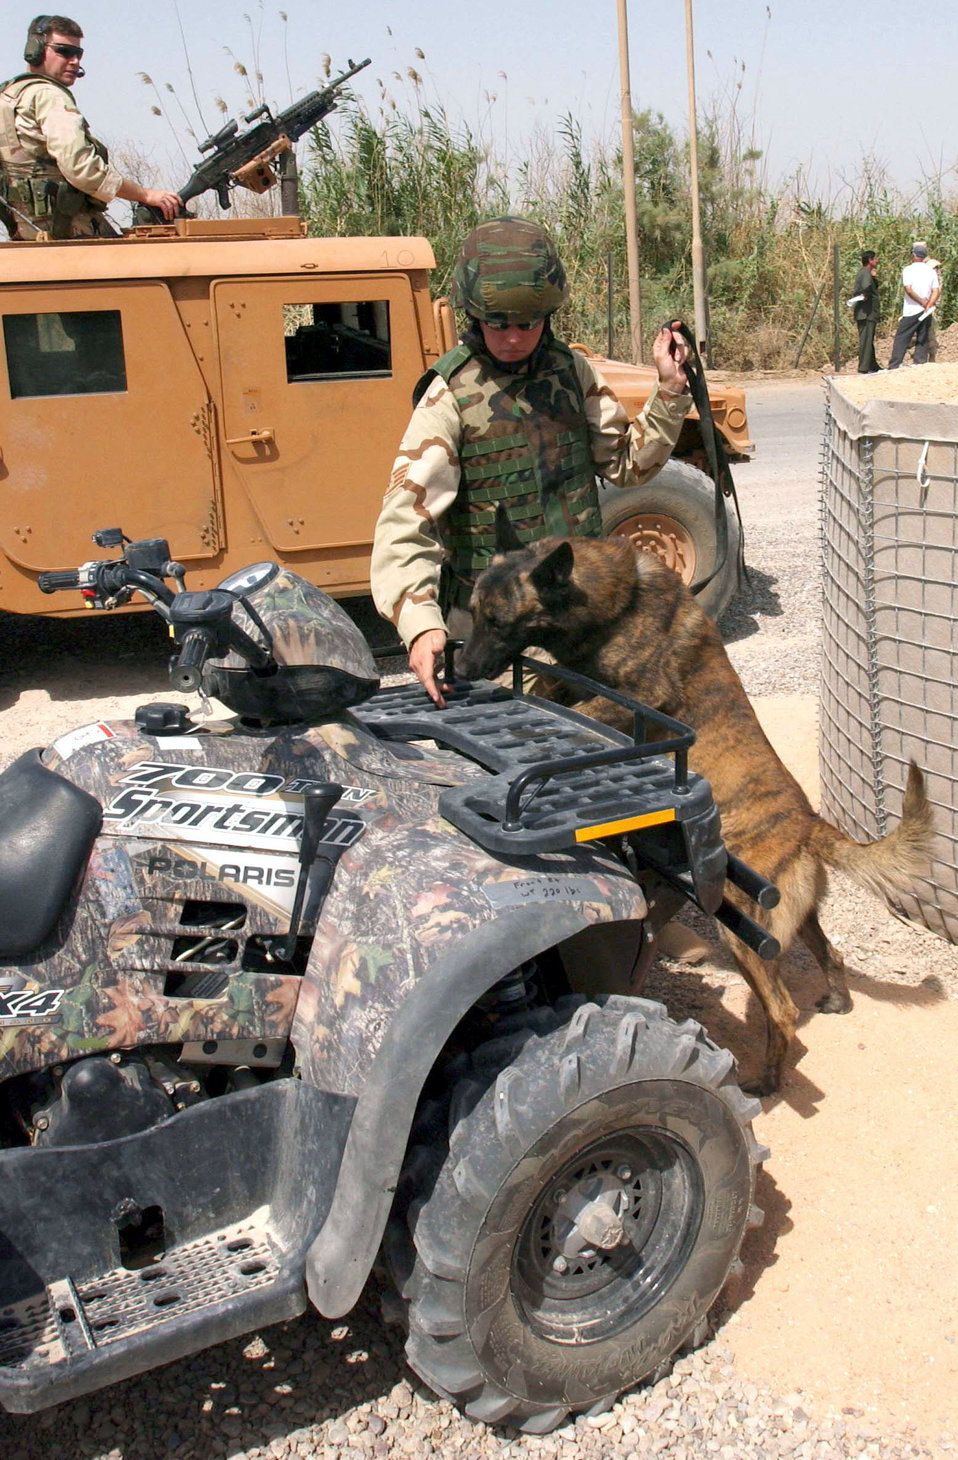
Airport security

OPERATION IRAQI FREEDOM -- Staff Sgt. Kristina Baker and dog, Rex, check out an all-terrain vehicle during an explosives search June 9 near an entry gate to Baghdad International Airport, Iraq. Baker and Rex are part of the first Air Force canine teams deployed to Camp Sather at the airport.